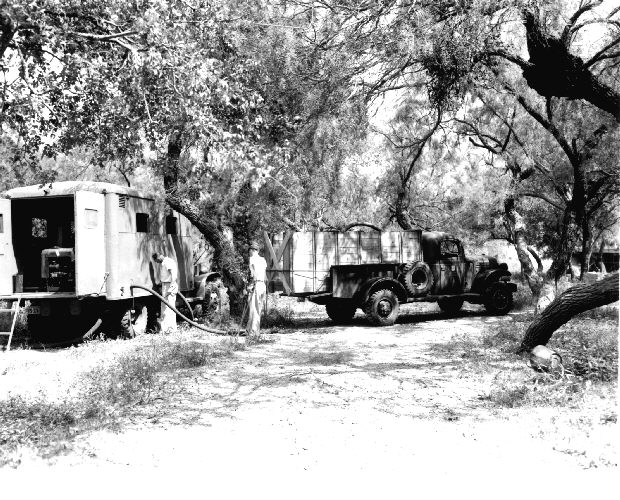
Flood, vector control and water treatment, Laredo, Texas.